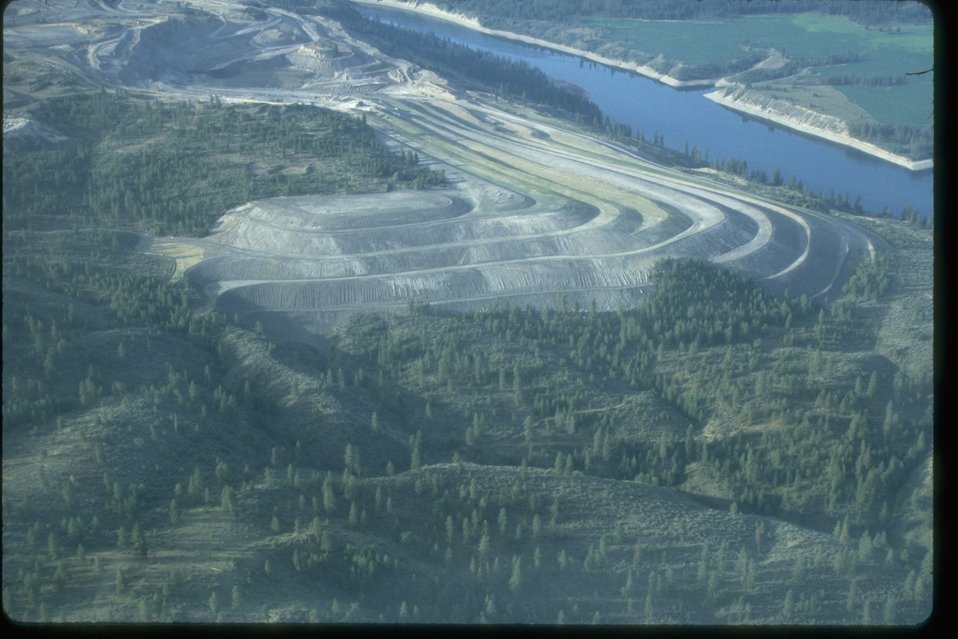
Sherwood Uranium Mine in Stevens County, Washington, before reclamation.